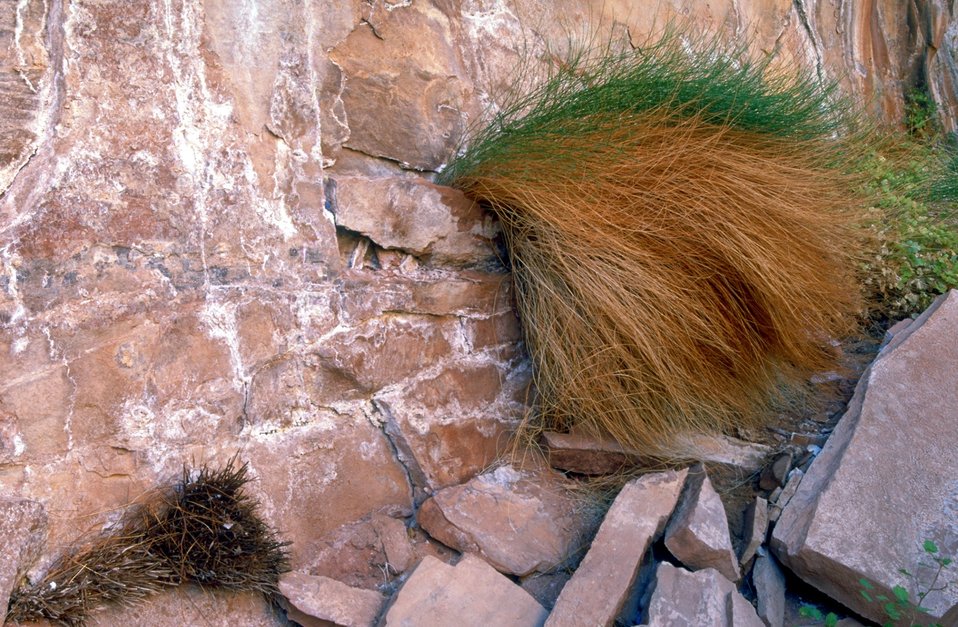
Vegetation in Hunter Canyon near Moab, Utah.